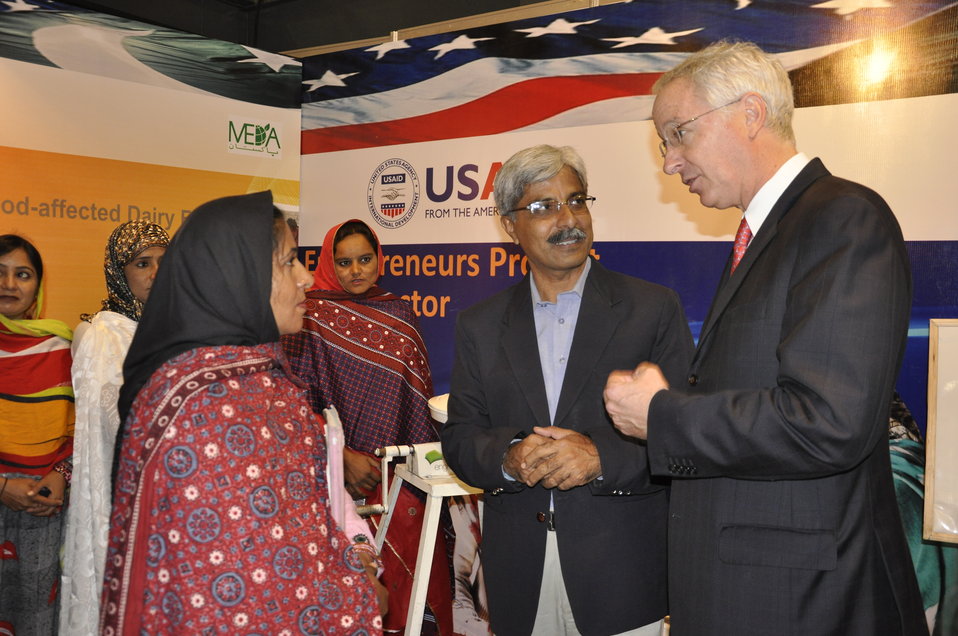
Ambassador Cameron Munter talking with the Female Livestock Extension Worker at the Entrepreneurs project stall